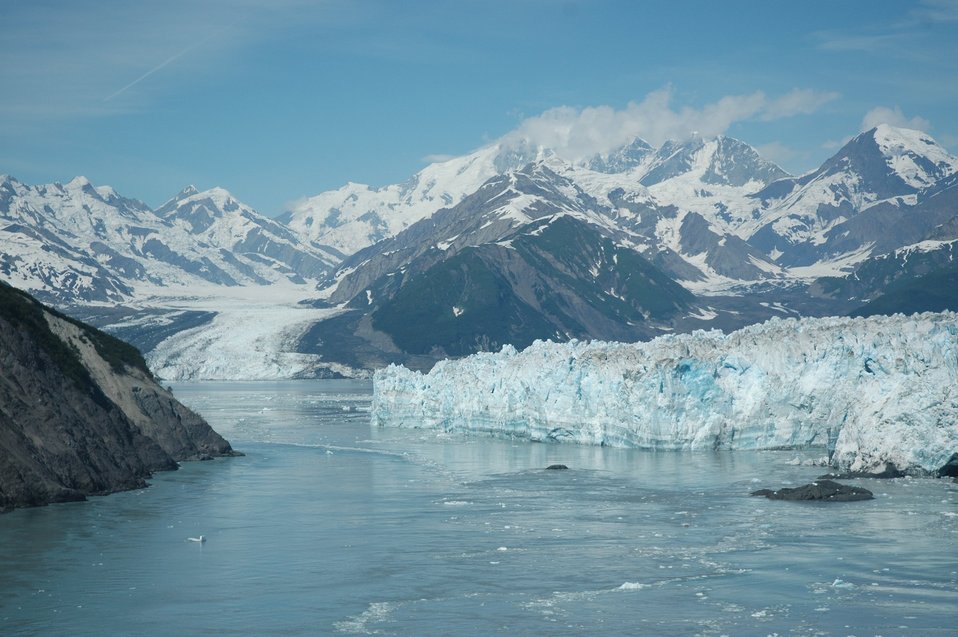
Aerial photograph. The front of Hubbard Glacier in Yakutat Bay.